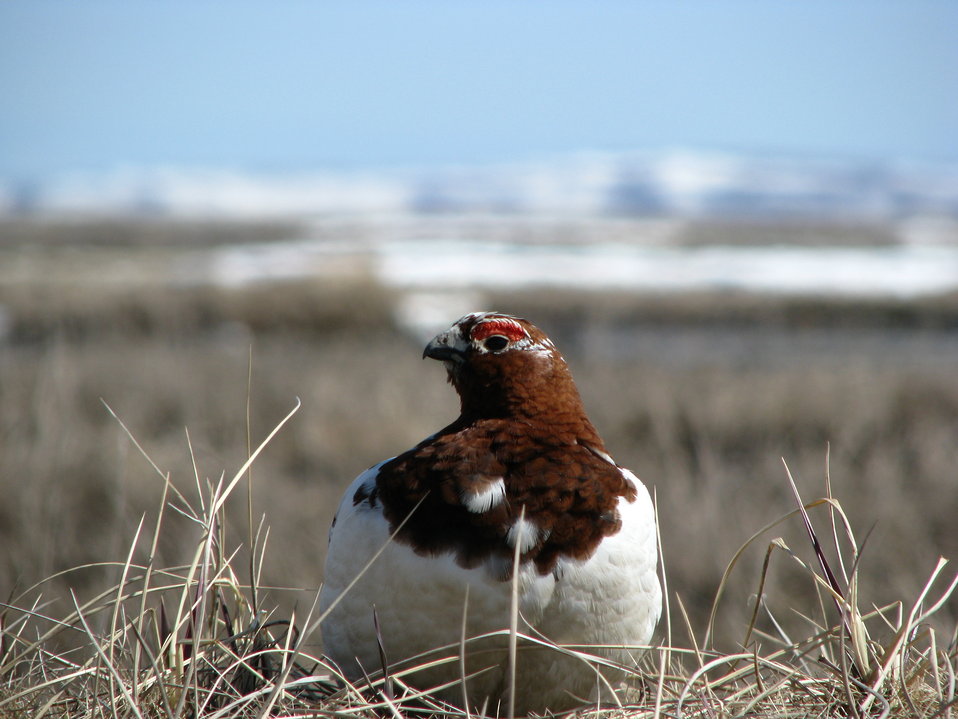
Willow ptarmigan

USFWS Yukon Delta NWR